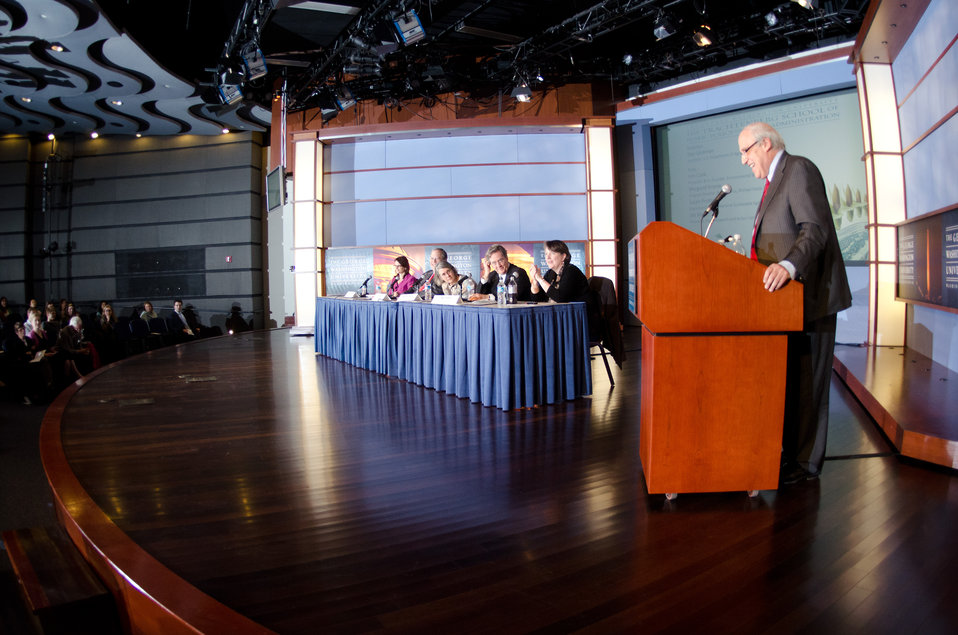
Panelists (left to right) National Sustainable Agriculture Coalition Executive Director Susan Prolman, Food Research and Action Center President Jim Weill, Michael Fields Agricultural Institute Public Policy Program Director Margaret Krome, Environmental Working Group President and Co-Founder Ken Cook, Agriculture Deputy Secretary Kathleen Merrigan and Former Agriculture Secretary, Congressman and moderator Dan Glickman, consider how to answer a question at the “Shaping the Farm Bill for a Sustainable Future” Forum in the Jack Morton Auditorium, at the Trachtenberg School of Public Policy and Public Administration, on the George Washington University campus in Washington, D.C., on Thursday, March 1, 2012.